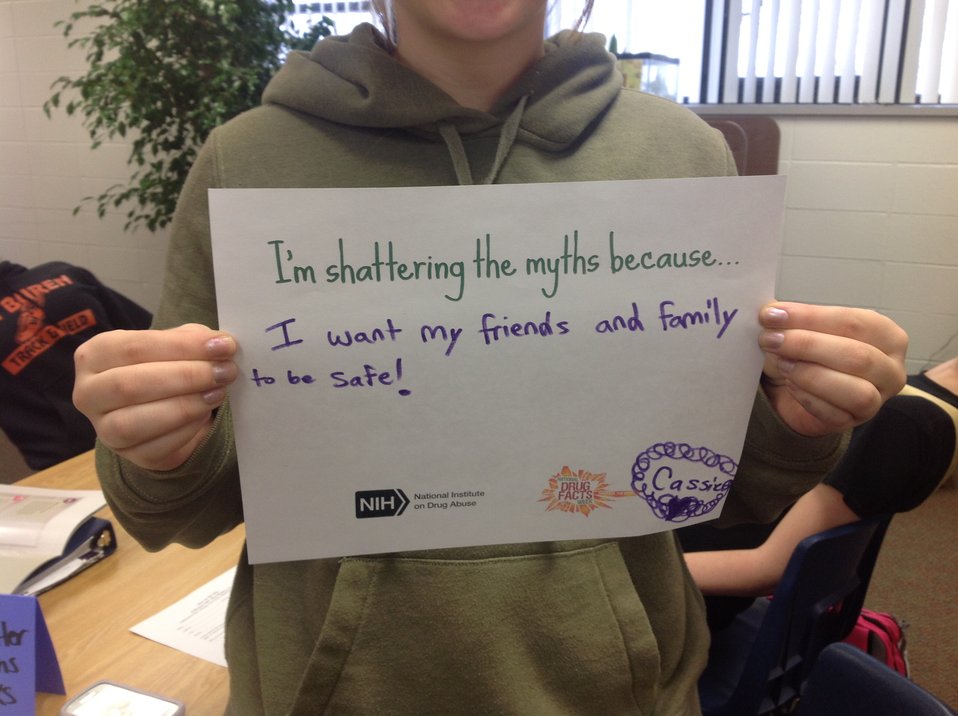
I'm Shattering the Myths Because...

Teenagers from the Van Buren County SAFE Coalition's, Youth Leadership Council (YLC) in Keosauqua, Iowa participate in various events during National Drug Facts Week, 2014.